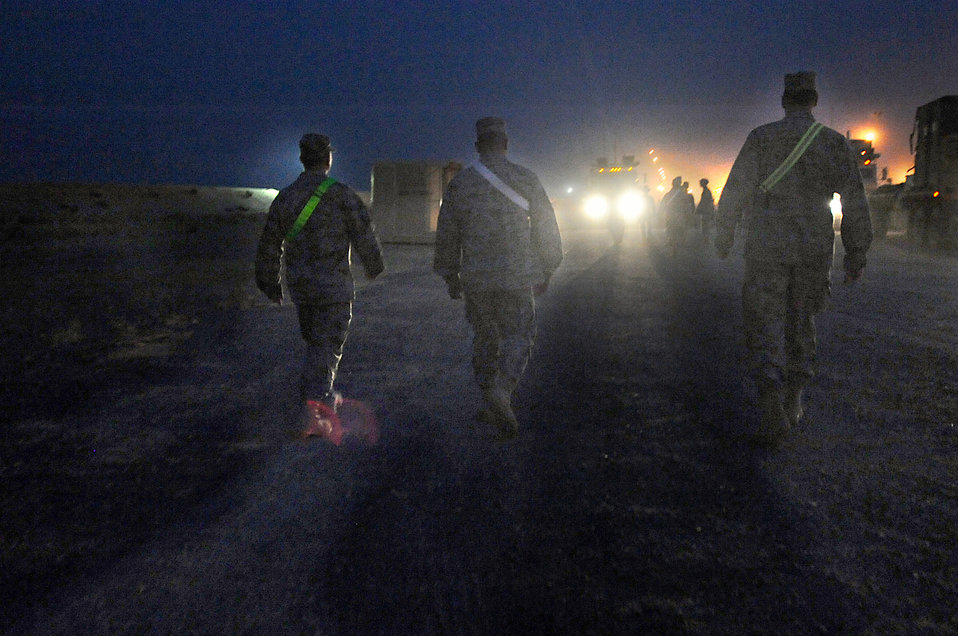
Convoy in Southwest Asia

Airmen are greeted by squadron, group and wing leaders upon their return from a convoy mission May 4, 2011, in Southwest Asia.